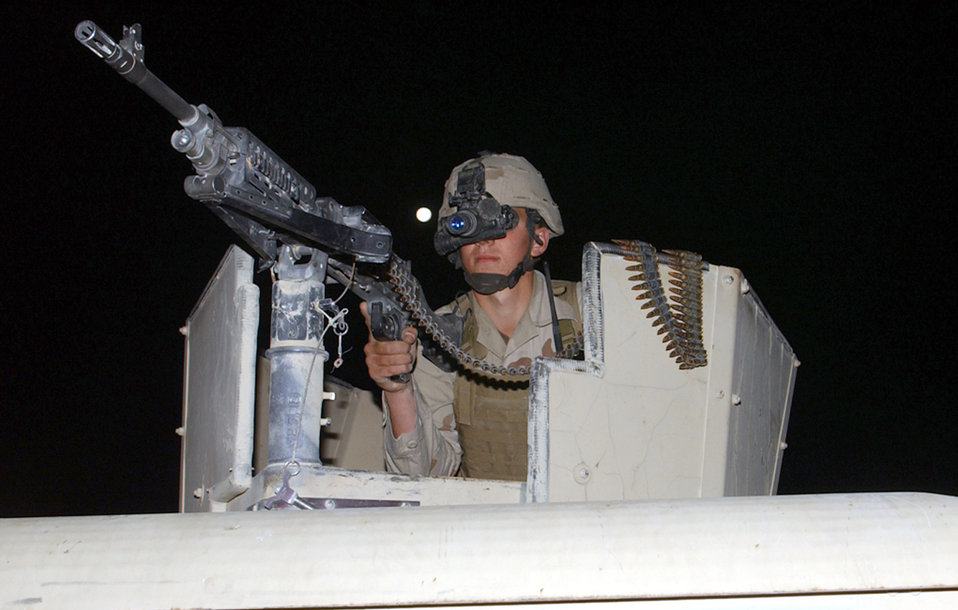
Early riser

BAGRAM AIR BASE, Afghanistan -- Airman 1st Class Ryan Flory uses night-vision goggles during an early morning patrol along the base perimeter here. Airman Flory is assigned to the 455th Expeditionary Security Forces Squadron and deployed from McChord Air Force Base, Wash.